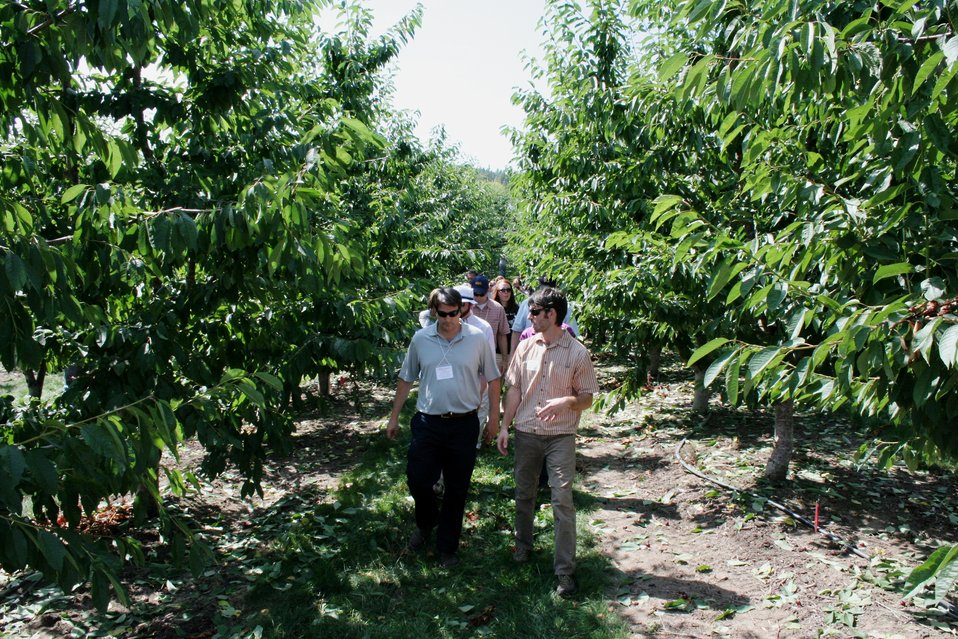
On the Road with Mike Taylor

Nathaniel Lewis of the Washington state Department of Agriculture (right) talking with FDA Consumer Safety Officer Samir Assar while touring the cherry orchards of Stemilt Growers in Wenatchee, WA. FDA Deputy Commissioner Michael Taylor and colleagues started a five-day tour of the Pacific Northwest on Sunday, Aug. 11, 2013 -- visiting Idaho, Oregon and Washington -- to get a first-hand look at produce production and irrigation operations, and to discuss the proposed Produce Safety Rule with growers, food industry representatives and state officials. For more about Mike's multi-region tour, read these FDA Voice blog posts:

• Hearing the Concerns of Maine Growers Striving for Agricultural Diversity
• On the Road with Mike Taylor: Touring the Pacific Northwest
• On the Road with Mike Taylor, Day 2: Frank Talk in Farm Country
• On the Road with Mike Taylor, Day 3: Families and Partnerships
• On the Road with Mike Taylor, Day 4: Looking to the Future